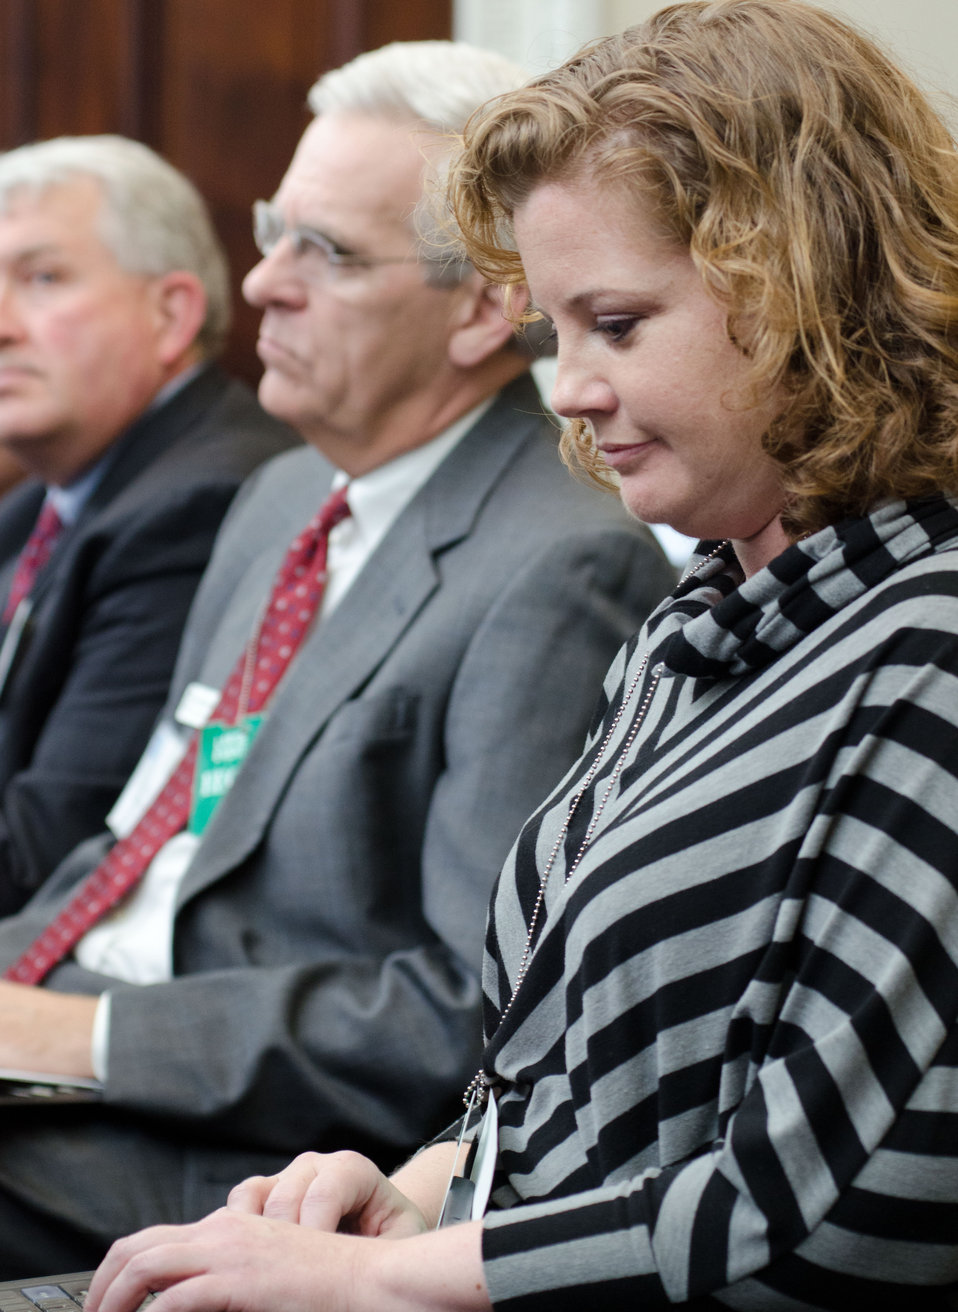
Eco Trust/Food Hub’s Amanda Oborne, immediately began writing about her experience speaking to Agriculture Deputy Secretary Kathleen Merrigan and Director, White House Office of Public Engagement Jon Carson, about food infrastructure, while at the White House, in Washington, D.C., on Monday, March 5, 2012. Food-Hub is emerging as incredible online platform to connect producers and buyers across the Northwest. Through Food-hub, producers can find ways to access new markets, and buyers can find local producers that meet their needs. Food-Hub is also using innovative web platforms and data to facilitate these relationships. Food-Hub received funds from a Rural Business Opportunity Grants (RBOG) program. The program promotes sustainable economic development in rural communities with exceptional needs through provision of training and technical assistance for business development, entrepreneurs, and economic development officials and to assist with economic development planning. The event was a virtual conversation, a continuance of the National Conversation on Local and Regional Food projects and how they offer economic opportunities to local farmers, ranchers and food entrepreneurs.